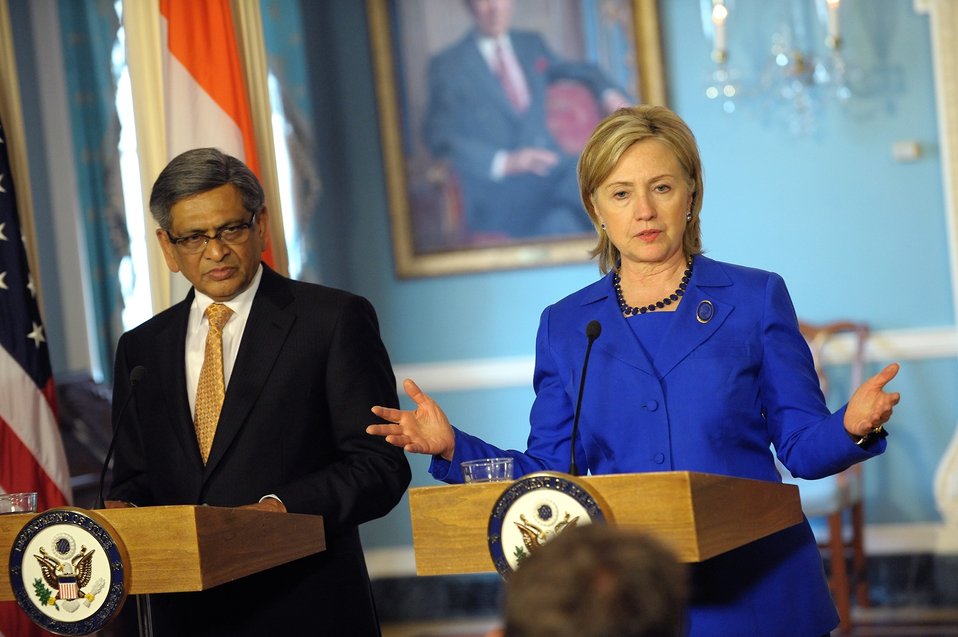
Secretary Clinton Responds to Questions With Indian Minister of External Affairs S.M. Krishna

U.S. Secretary of State Hillary Rodham Clinton responds to questions at a joint press availability with Indian Minister of External Affairs S.M. Krishna at the U.S. Department of State in Washington, D.C., on June 3, 2010.